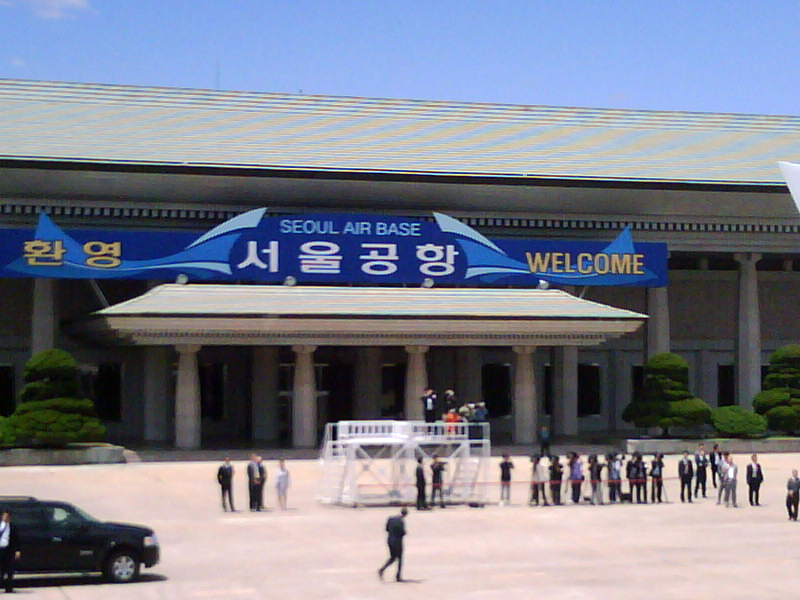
Behind the Scenes: View From Plane as Secretary Clinton Arrives in Seoul, South Korea

This is a view from the plane as U.S. Secretary of State Hillary Rodham Clinton is about to deplane in Seoul, South Korea May 26, 2010.